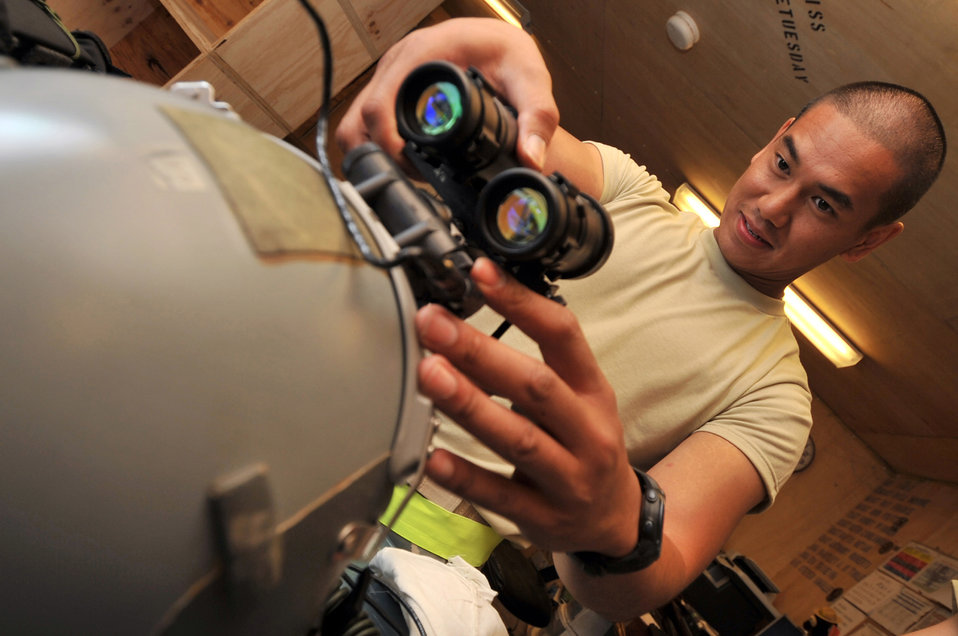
Another set of eyes

Senior Airman Ferdie Villaflores performs a daily inspection on aircrew flight equipment June 8, 2011, at Bagram Airfield, Afghanistan. Airman Villaflores is an aircrew flight equipment specialist assigned to the 774th Expeditionary Airlift Squadron.